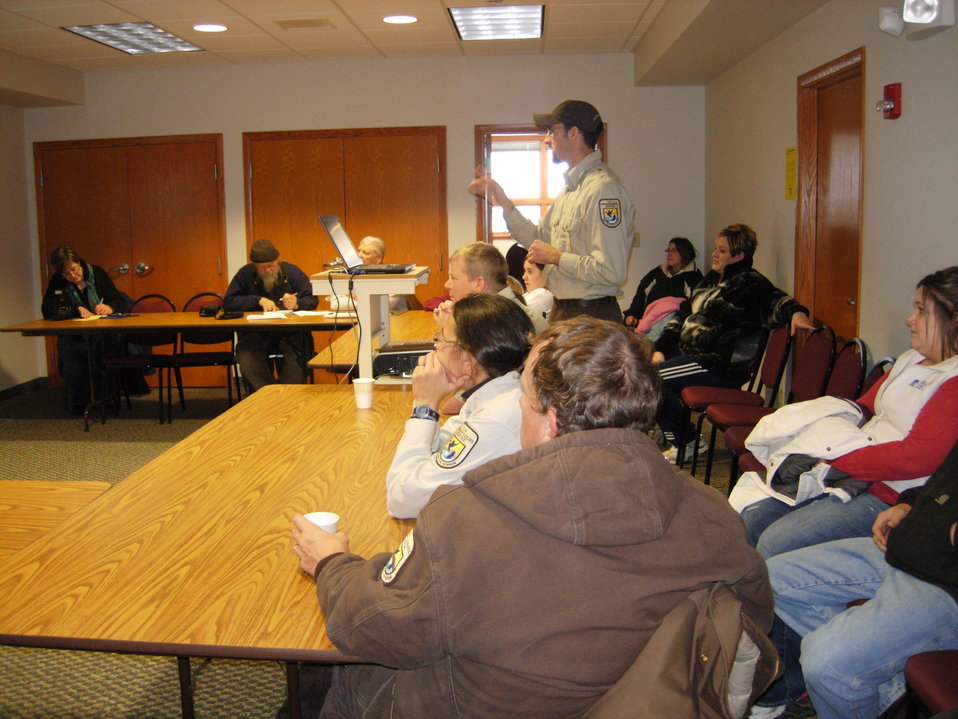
History Presentation

Biological Technician, Andy Jewett, giving Des Lacs National Wildlife Refuge history presentation to visitors.